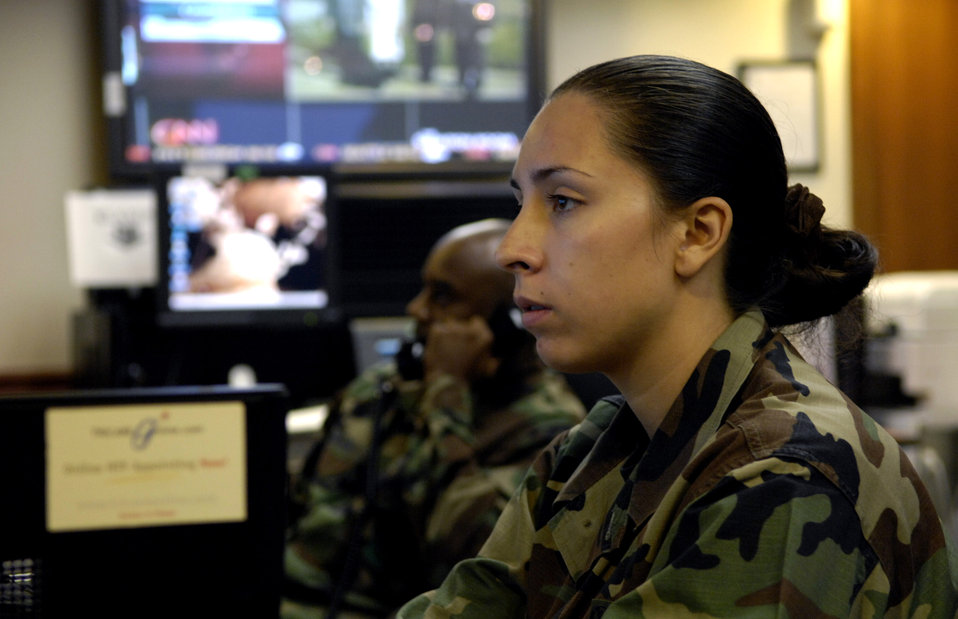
'One command post' initiative beneficial to Airmen

Airman 1st Class Brenda Davis and Staff Sgt. Lynn Brown work at their control consoles June 8 inside the command post at Hickam Air Force Base, Hawaii. The Airmen are emergency actions controllers with the 15th Airlift Wing.